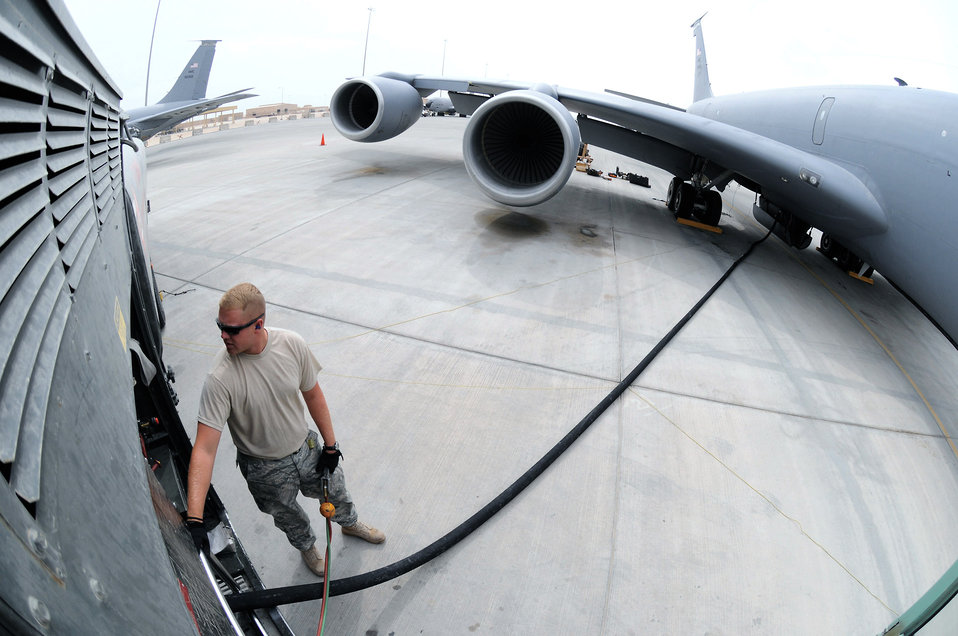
Airmen fuel the flight

Airman 1st Class Bradley Dean checks over the gauges on his fuel truck while fueling a KC-135 Stratotanker at an air base in Southwest Asia. He keeps his attention on the crew chief of the aircraft and the gauges on his fuel truck. Airman Dean is a fuels apprentice assigned to the 379th Expeditionary Logistics Readiness Squadron. He is a native of Tennessee Colony, Texas, and deployed from Moody Air Force Base, Ga.